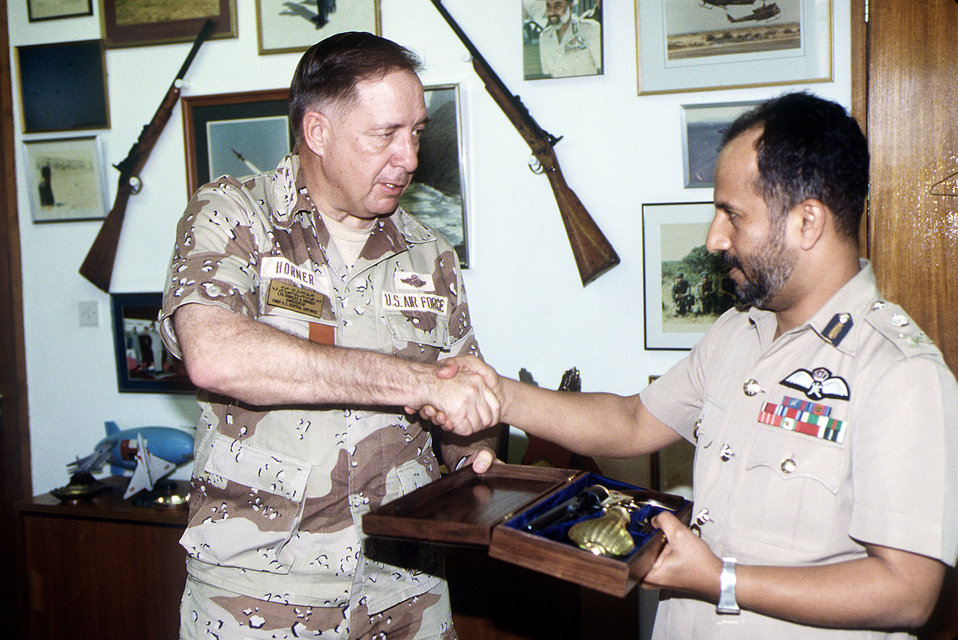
Lt. Gen. Charles A. Horner, commanding general, U.S. Central Air Force, presents Air Vice Marshal Talib Bin Miran Bin Zamam Al-Raeesi with a pistol in recognition of his performance during Operation Desert Storm.